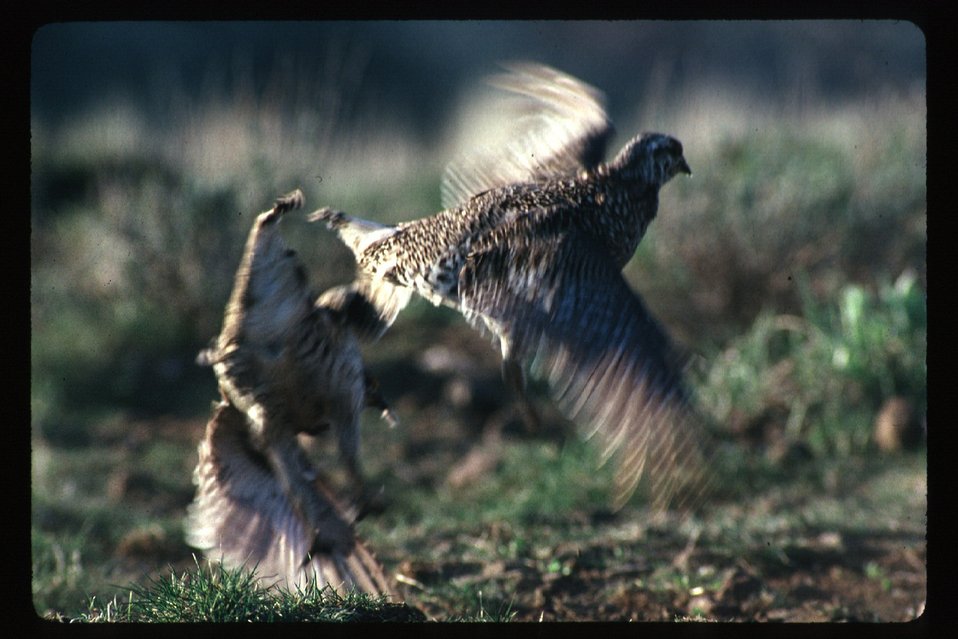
Columbia Sharp-tails fighting Wildlife Nelson Ranch LSRD Lower Snake River District